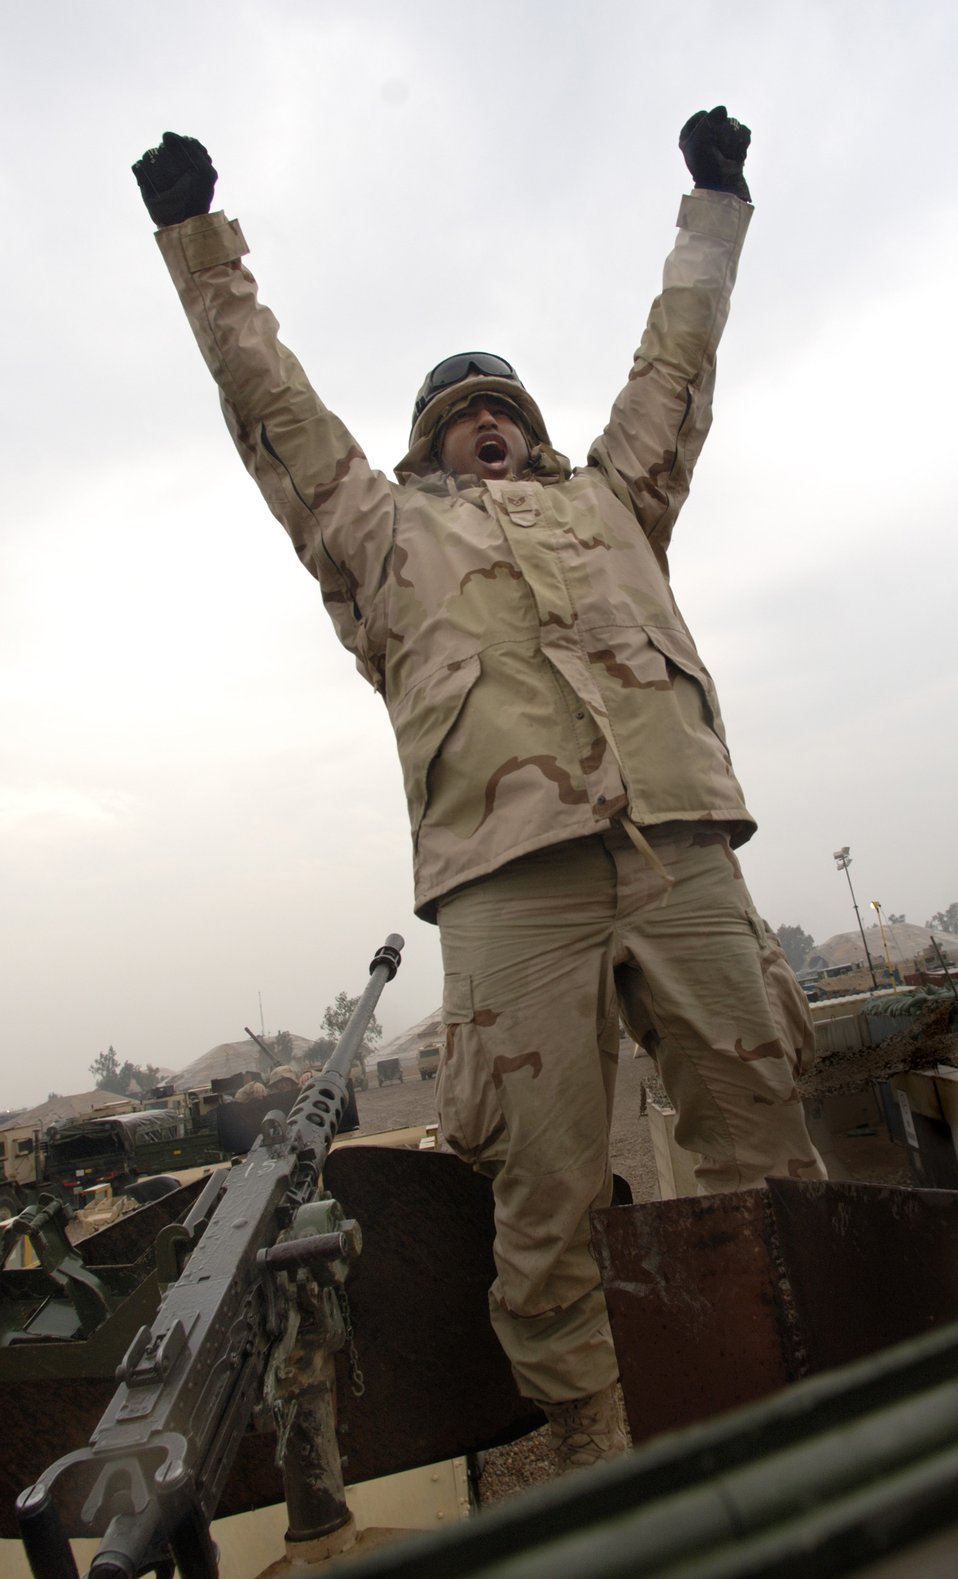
4 million miles

BALAD AIR BASE, Iraq (AFPN) -- Staff Sgt. Viktor Hancock celebrates the completion of a convoy security mission that achieved the unit's 4-million mile mark. As a gunner he operates the roof-mounted 128-pound, 50-caliber M2 machine gun. When called upon he can unleash 450 to 550 rounds per minute at up to 6,764 meters away. Sergeant Hancock is assigned to the 732nd Expeditionary Logistics Readiness Squadron and is deployed from Nellis Air Force Base, Nev.